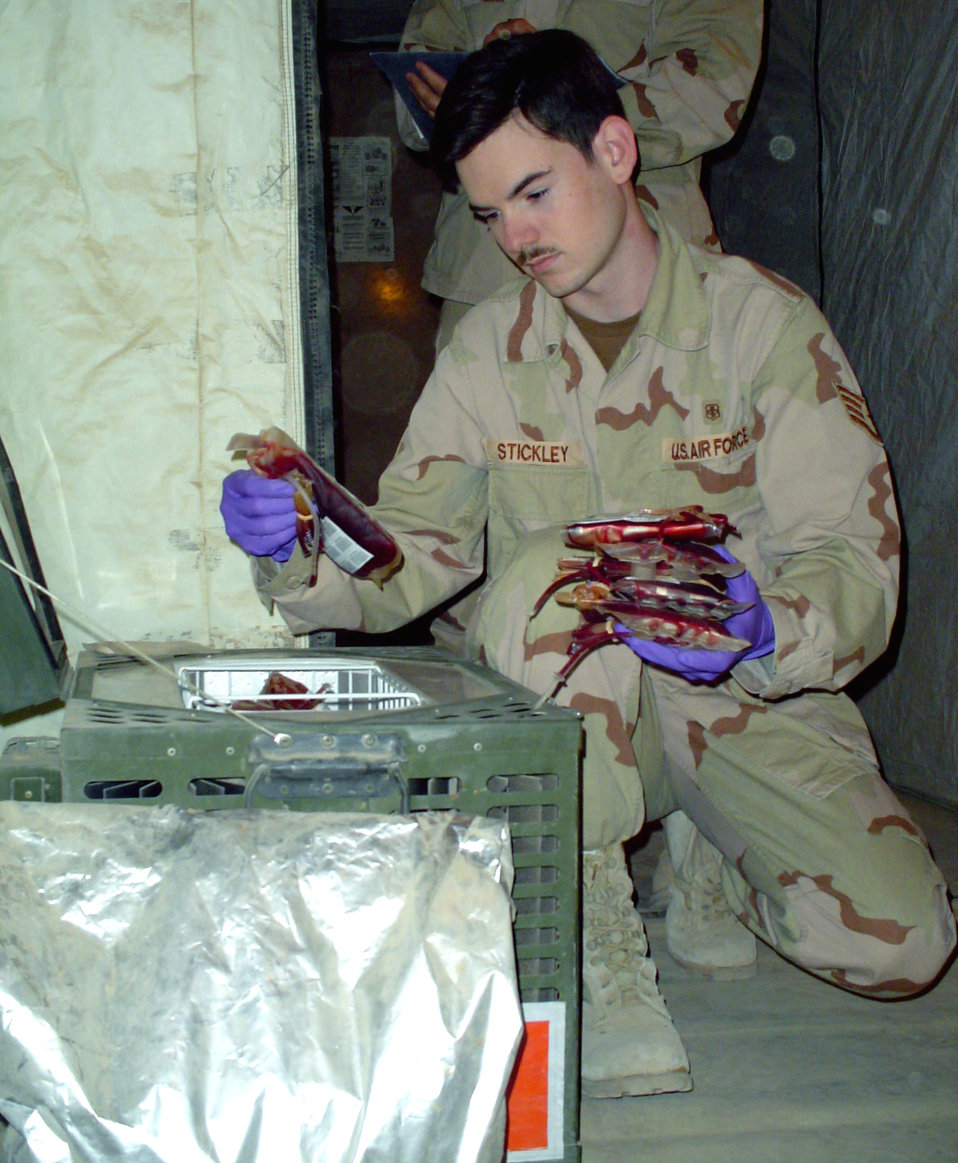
Multifaceted care

CAMP SATHER, Iraq -- Staff Sgt. Matthew Stickley, a medical technician, checks the 447th Expeditionary Medical Squadron's blood supply here. Technicians account for the blood, which is stored in refrigeration units at the beginning and end of every shift. The units can store up to 35 pints each.